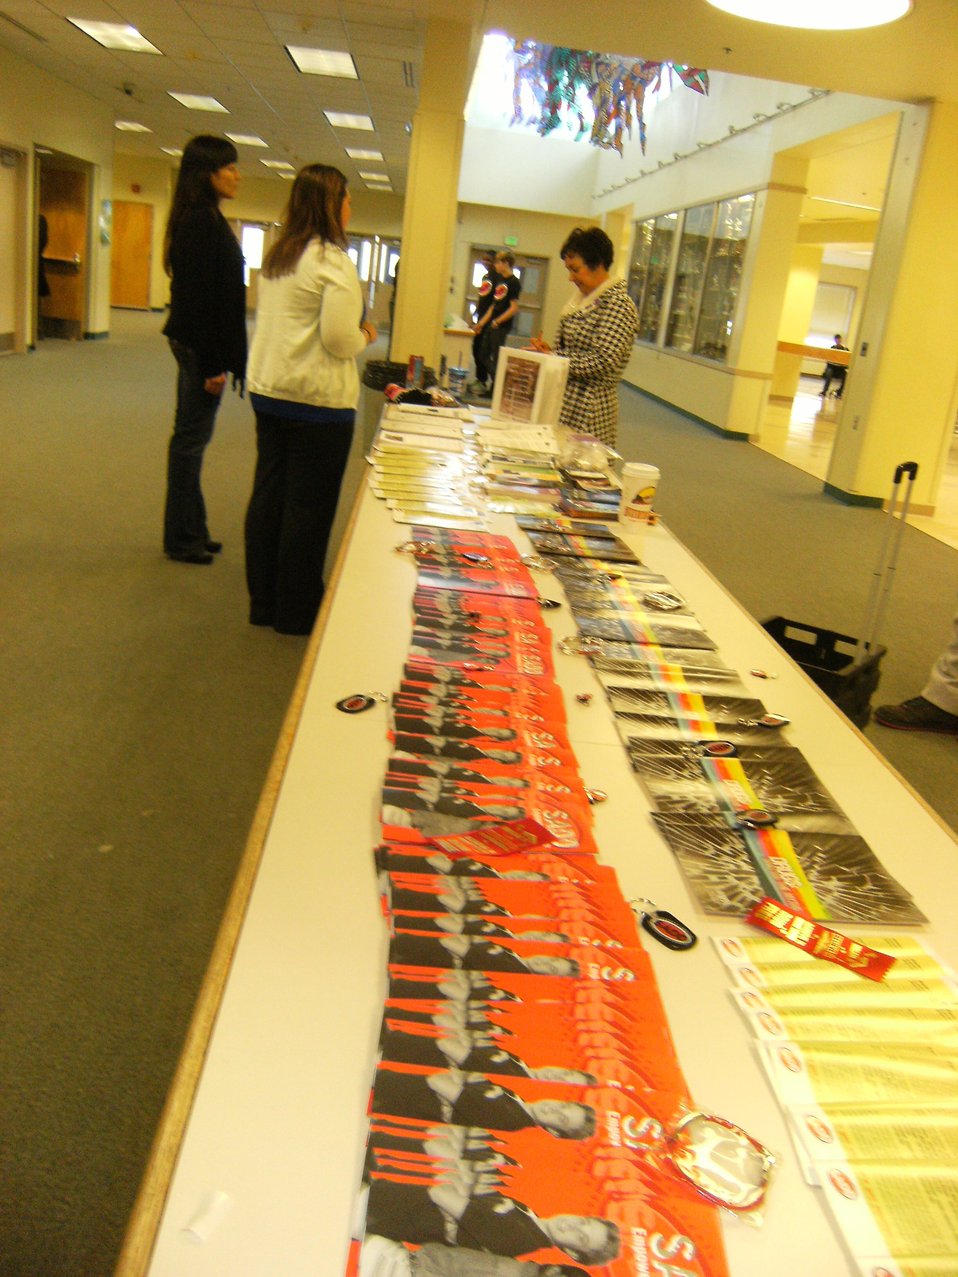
Chat Day - Alaska